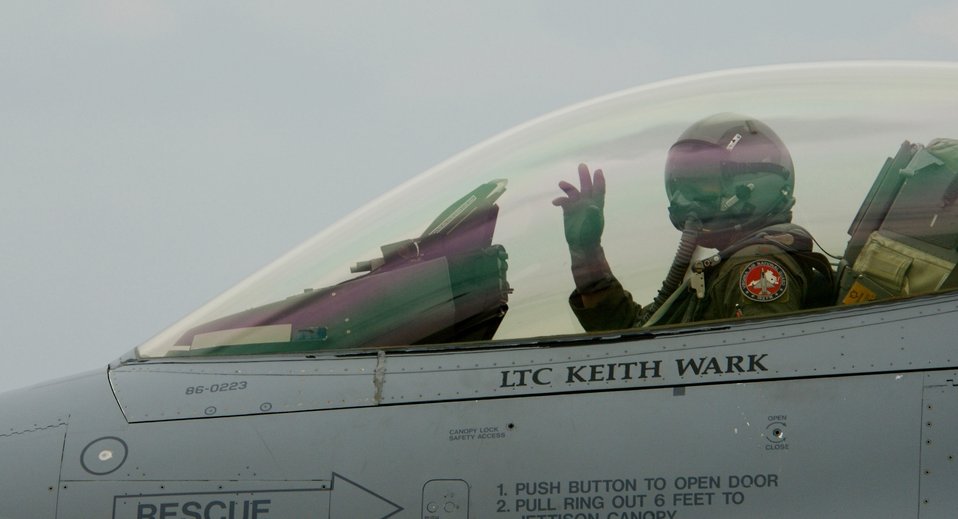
Virginia ANG Unit transitions to F-22

Maj. Mark Mitchum, a pilot with the Virginia Air National Guard's 192nd Fighter Wing, waves as he taxis down the runway prior to flying his last mission in an F-16 Fighting Falcon. Pilots from the 192nd are transitioning from the F-16 to the F-22 Raptor and belong to the first Air National Guard unit to fly the Raptor.